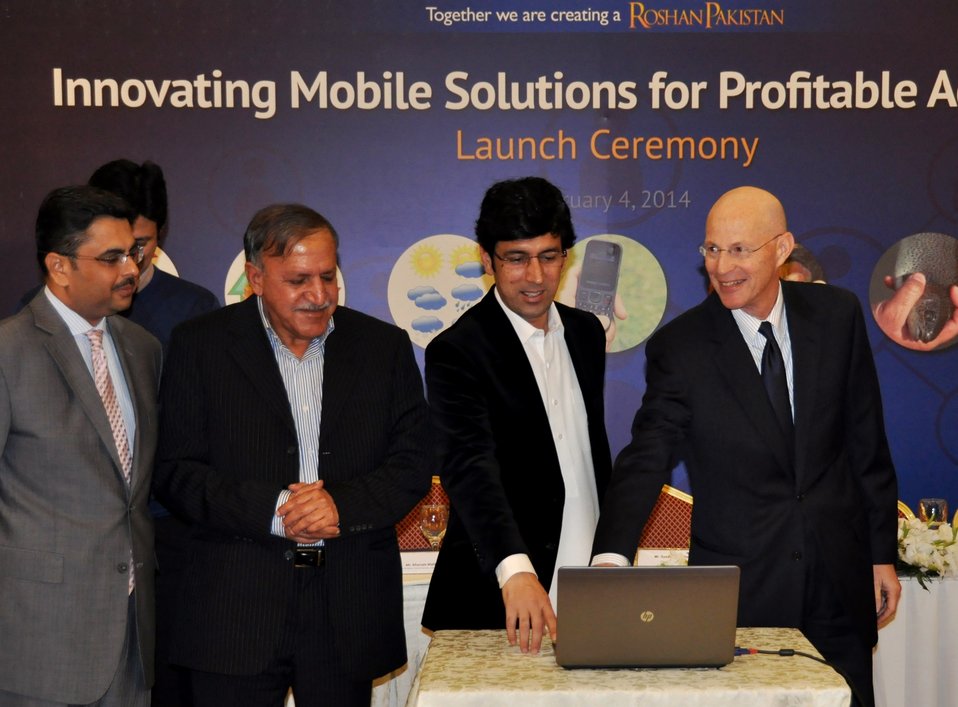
Launch Ceremony of the Mobile Agriculture Project

Gregory Gottlieb Mission Director USAID with Shahram Khan Tarrakai Minister for Agriculture, Livestock & Cooperation KP officially launching the SMS service for farmers by pressing the button. As a result the first SMS was sent to all registered farmers.